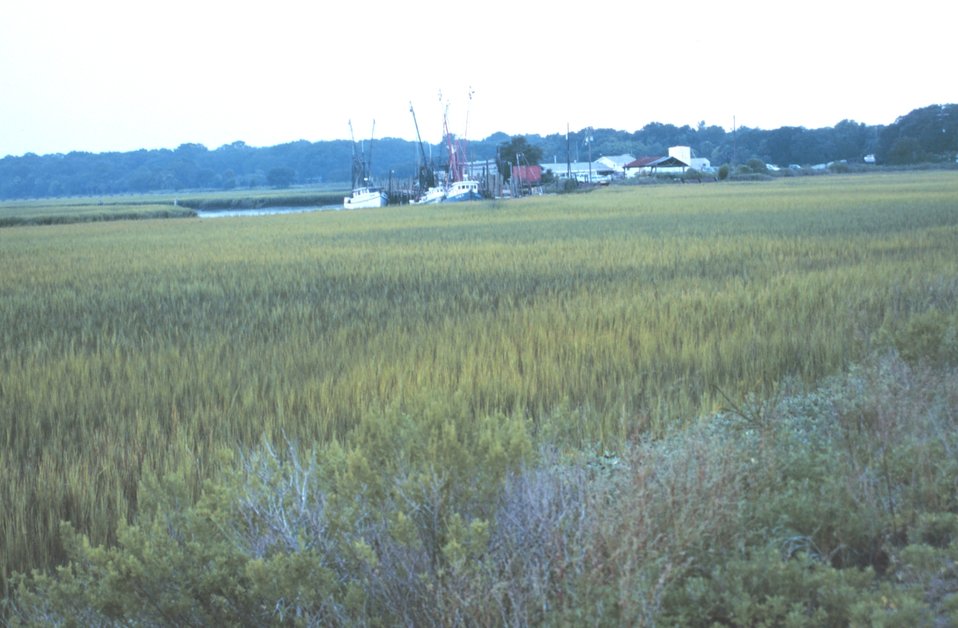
A small fishing village off Route 80